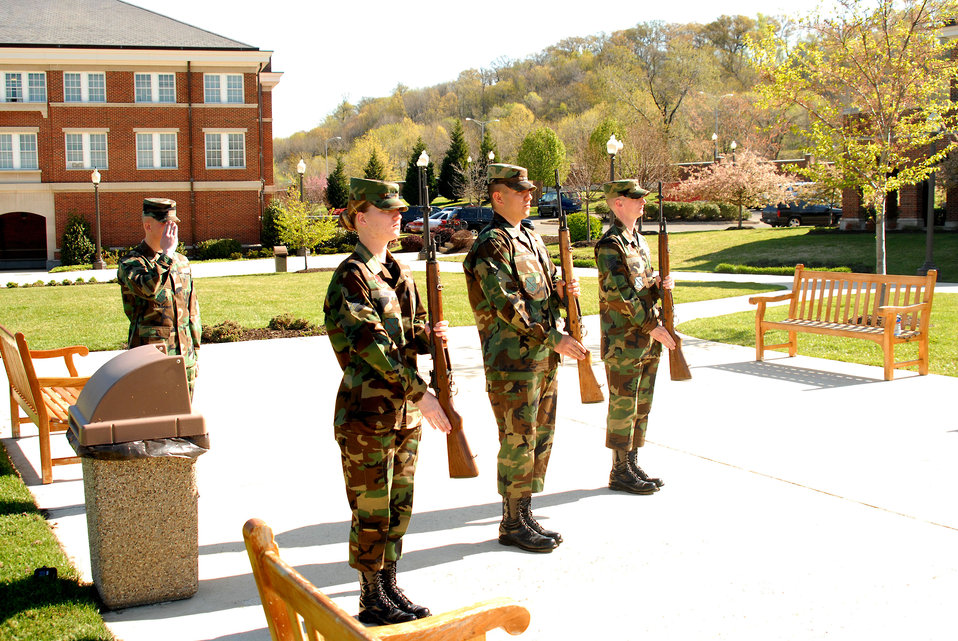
Retiree funerals change to 7-person sequence

Airmen from the United States Air Force Honor Guard at Bolling Air Force Base, D.C., practice the newly implemented 7-person retiree funeral sequence. The new sequence was implemented due to manpower shortages and a larger number of retiree funerals than ever before in Air Force history.